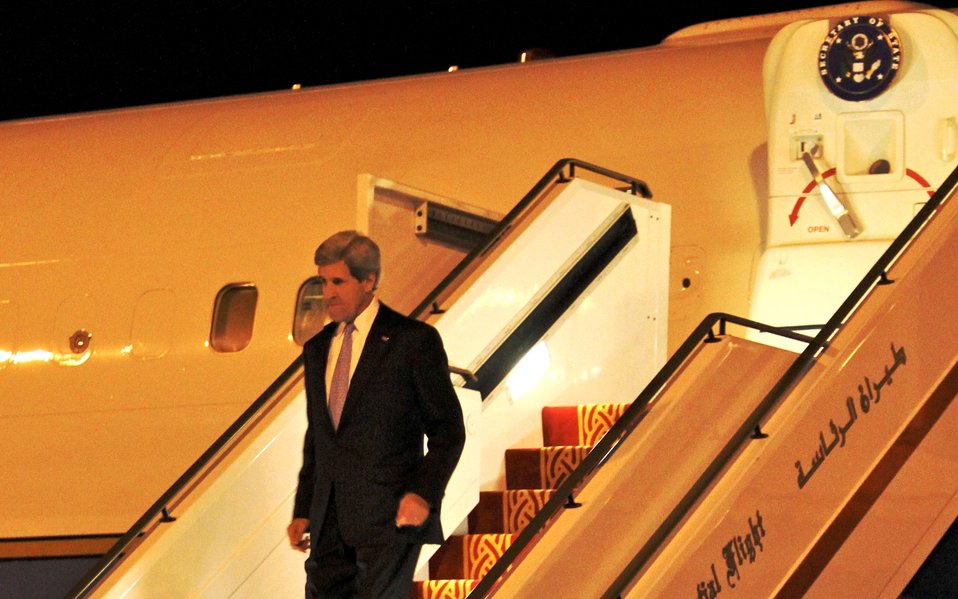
Secretary Kerry Arrives in Abu Dhabi

U.S. Secretary of State John Kerry arrives in Abu Dhabi, United Arab Emirates, on March 4, 2013.